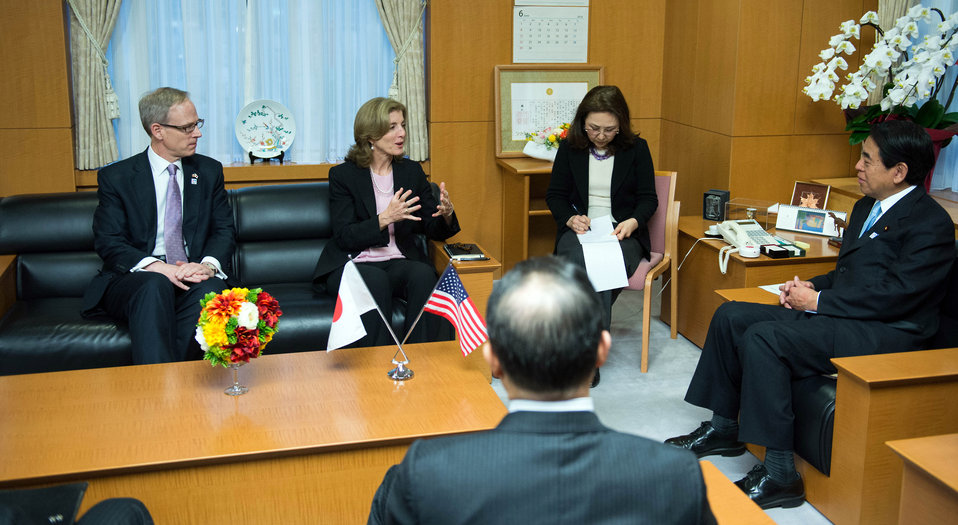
Ambassador Kennedy Meets With Japanese Education Minister Shimomura

U.S. Ambassador to Japan Caroline Kennedy pays a courtesy call on Hakubun Shimomura, Japan’s Minister of Education, Culture, Sports, Science and Technology, in Tokyo, Japan, on April 8, 2014.